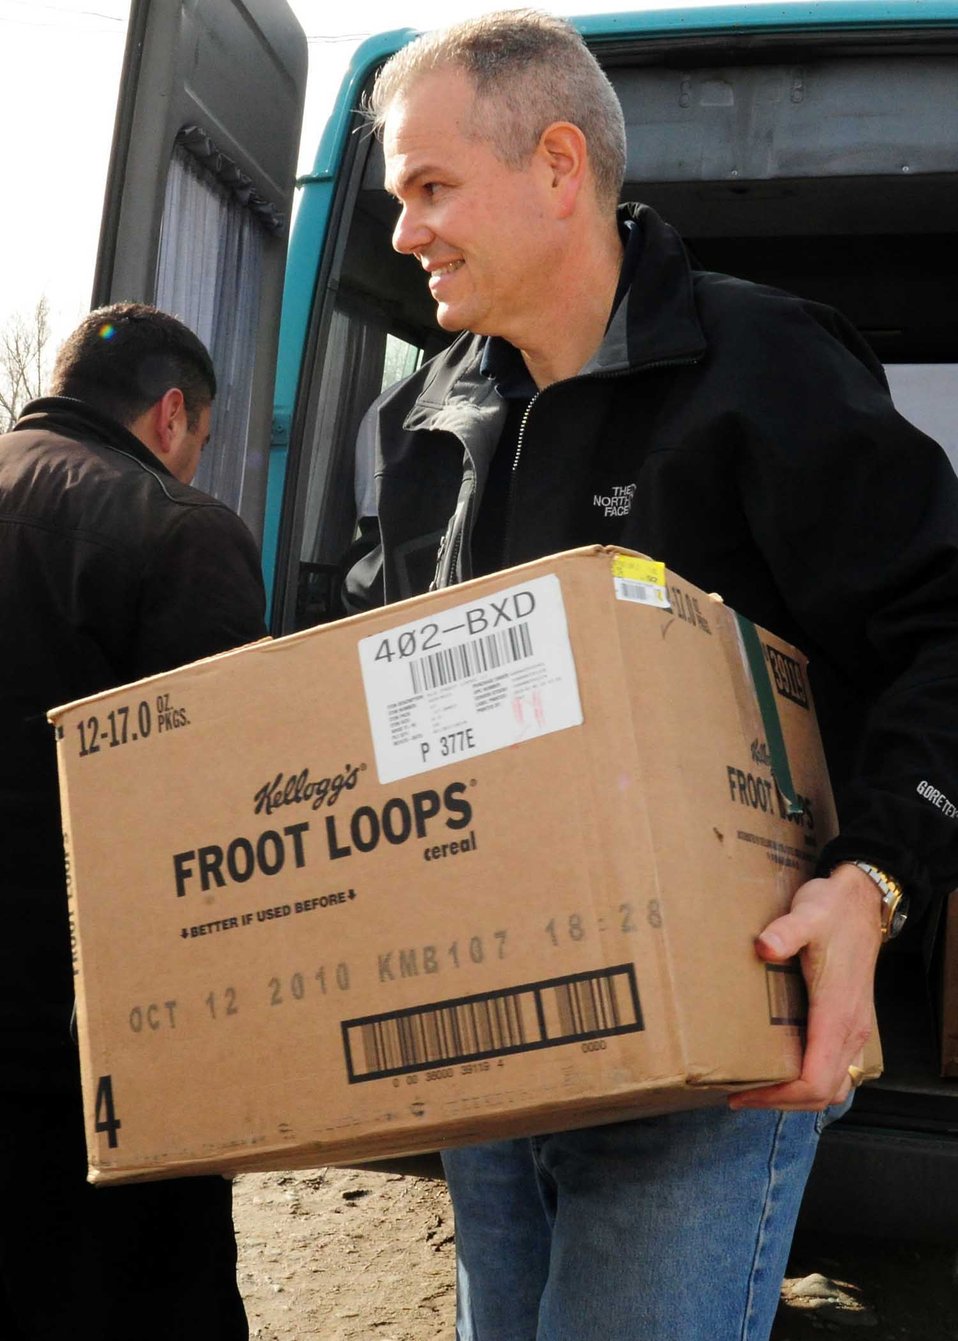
Manas Airmen deliver care packages to Kyrgyz villagers

Lt. Col. Rex Vanderwood unloads a box of humanitarian assistance items he collected from stateside bases and friends to distribute to families March 18, 2010, in Manas Village, Kyrgyzstan. Colonel Vanderwood is the 376th Expeditionary Mission Support Group deputy commander.